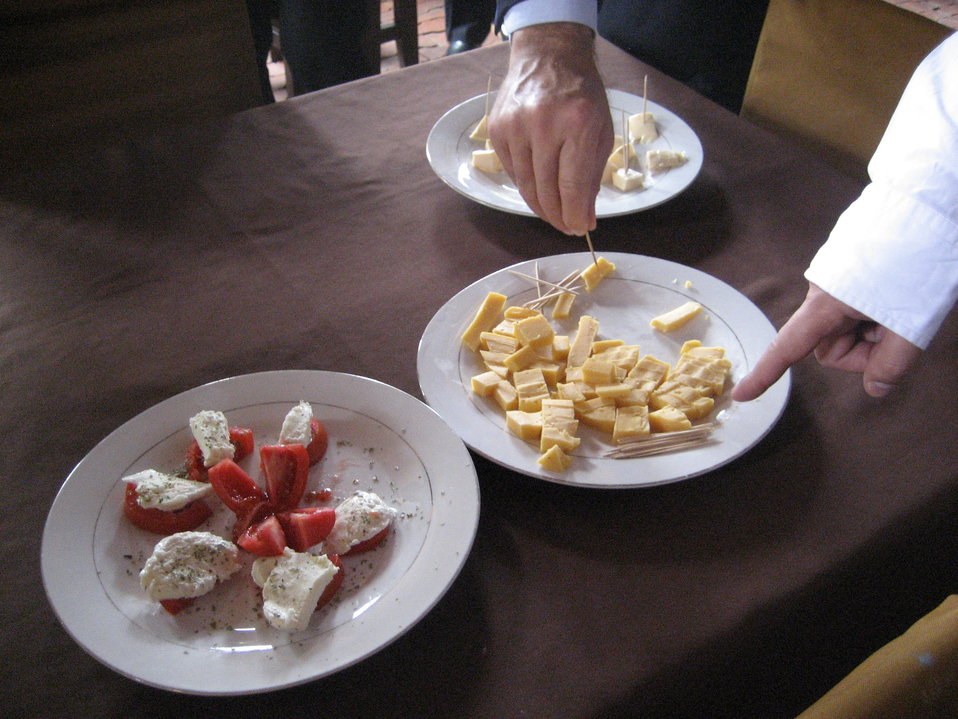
Deputy Secretary Neal Wolin’s trip to Africa 2009

Delicious samples….